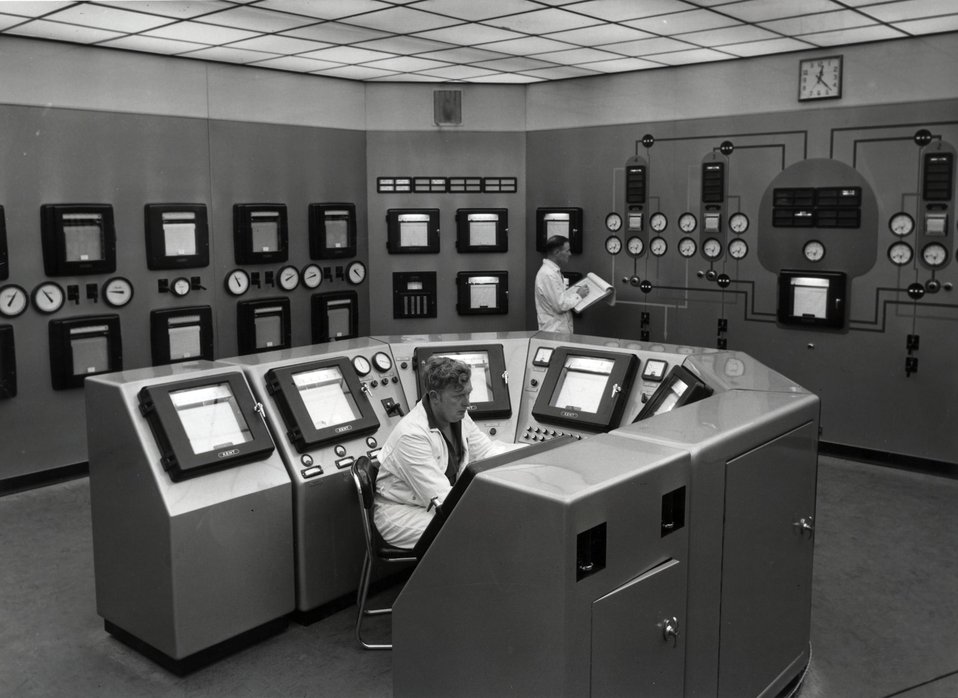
Calder Hall. The No. 1 reactor control room showing the control desk and the instrumentation. c. 1956